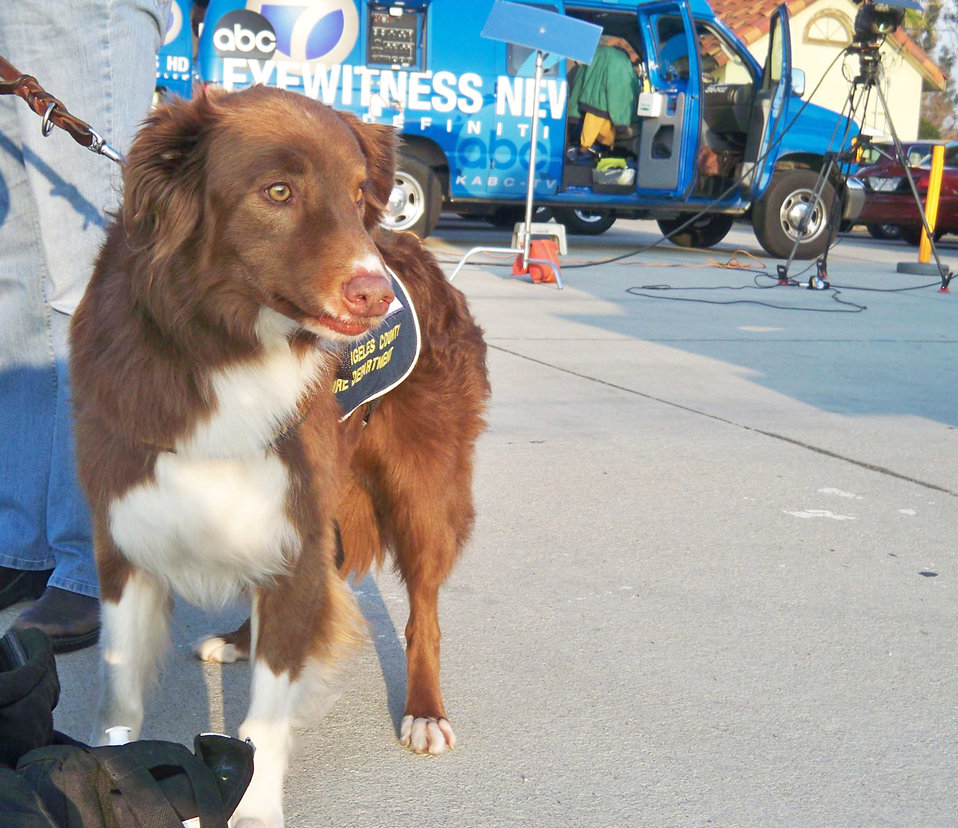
March officials assist with Haiti earthquake relief efforts

A dog waits patiently while her handler responds to questions from a reporter Jan. 13, 2010, at March Air Reserve Base, Calif. The dog is from a Los Angeles County Fire Department K-9 unit that deployed to Haiti from March ARB.